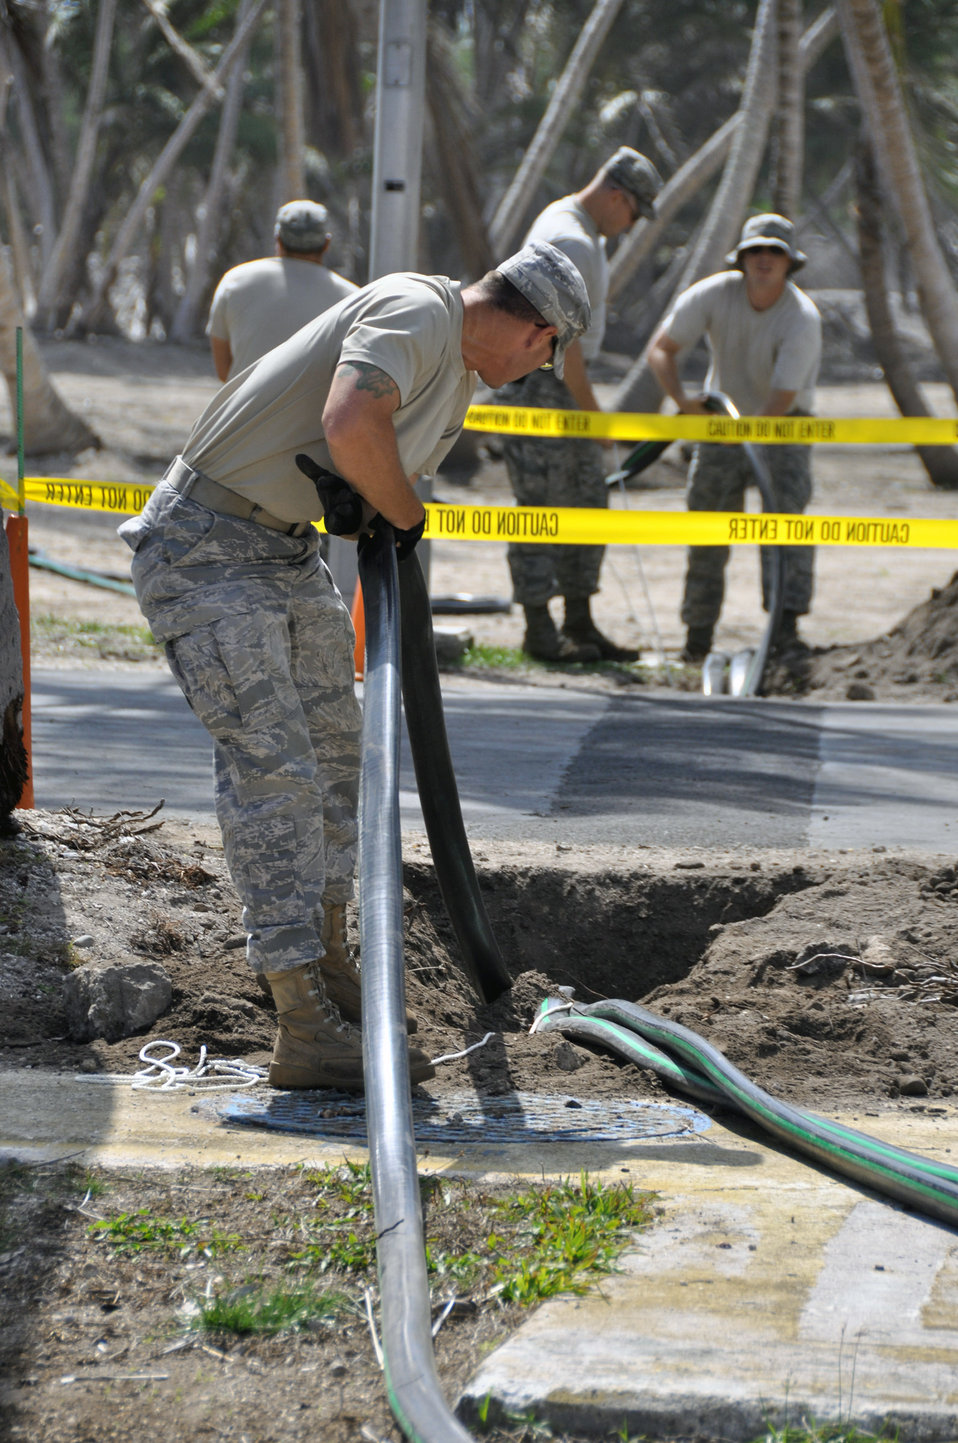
Airmen provide island residents with drinkable water

Civil engineer Airmen work to connect tubes to water tanks April 18 to replenish the water supply here that was ruined by unusually high tides in the early part of February at Roi-Namur in the Marshall Islands. The Airmen have treated more than 1,840,000 gallons of water since their arrival.